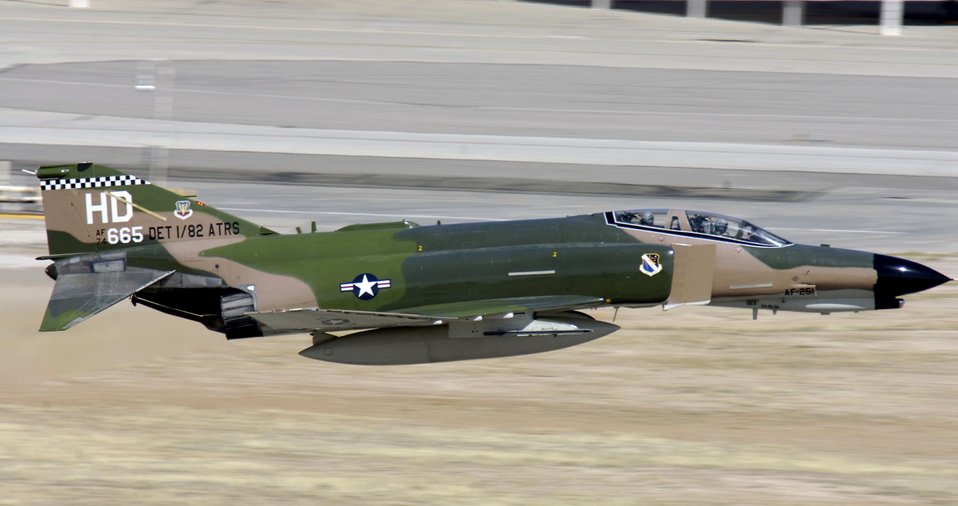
Heritage Conference mixes old with new

A F-4 Phantom II takes off from Davis-Monthan Air Force Base, Ariz., March 3 during the 2007 Heritage Conference. The conference provides an opportunity for Air Combat Command demonstration pilots to train together with modern and historic military aircraft in preparation for the upcoming air-show season.